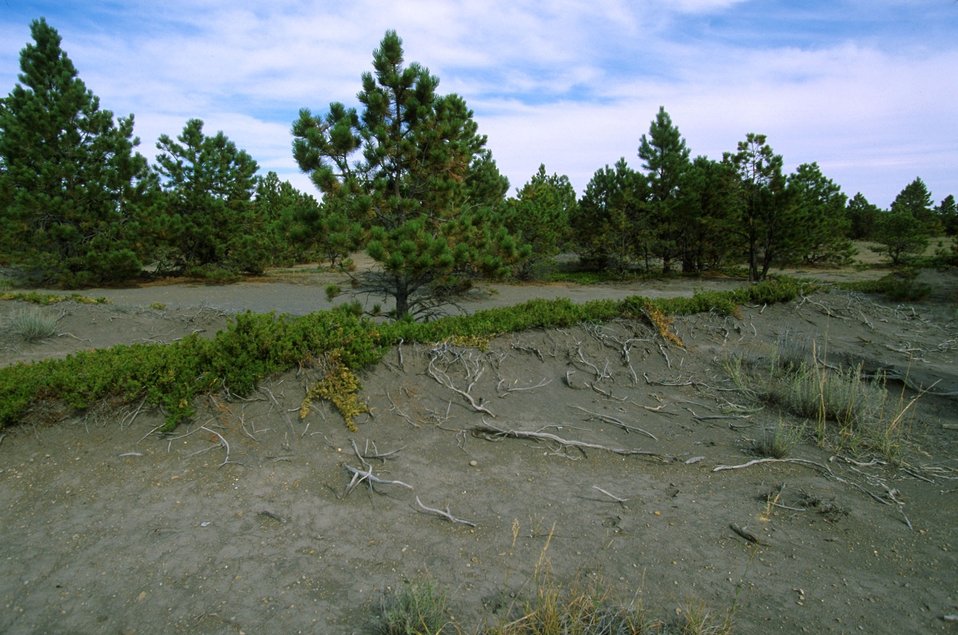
Acid Shale Area of Critical Environmental Concern (ACEC)